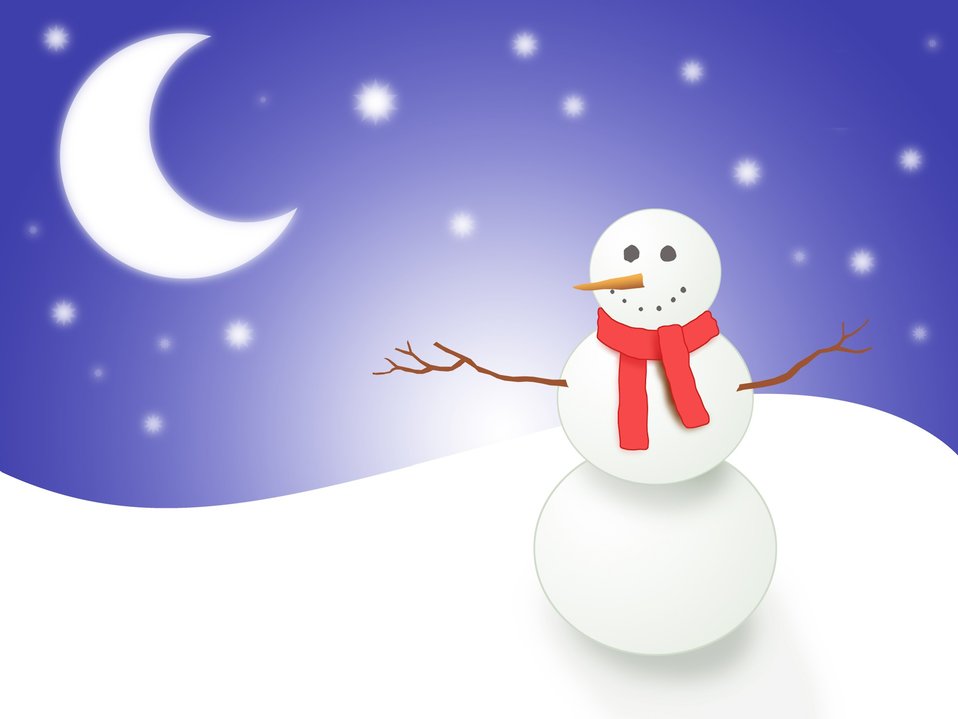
Snowman with moon

Illustration of snowman with moon and stars.